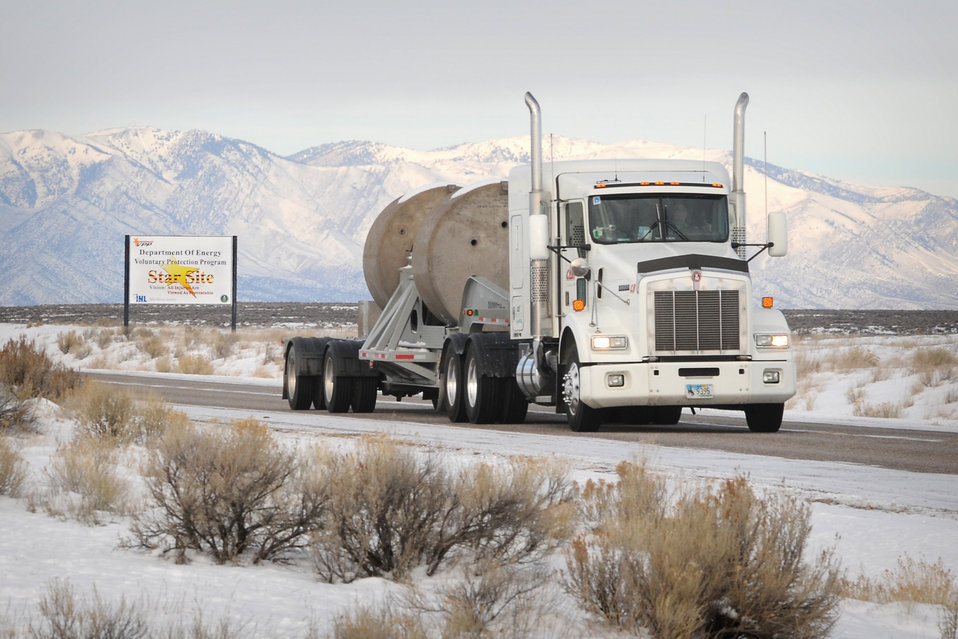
TRU shipments leaving Idaho Site

RH-TRU shipments leaving the Idaho Site.